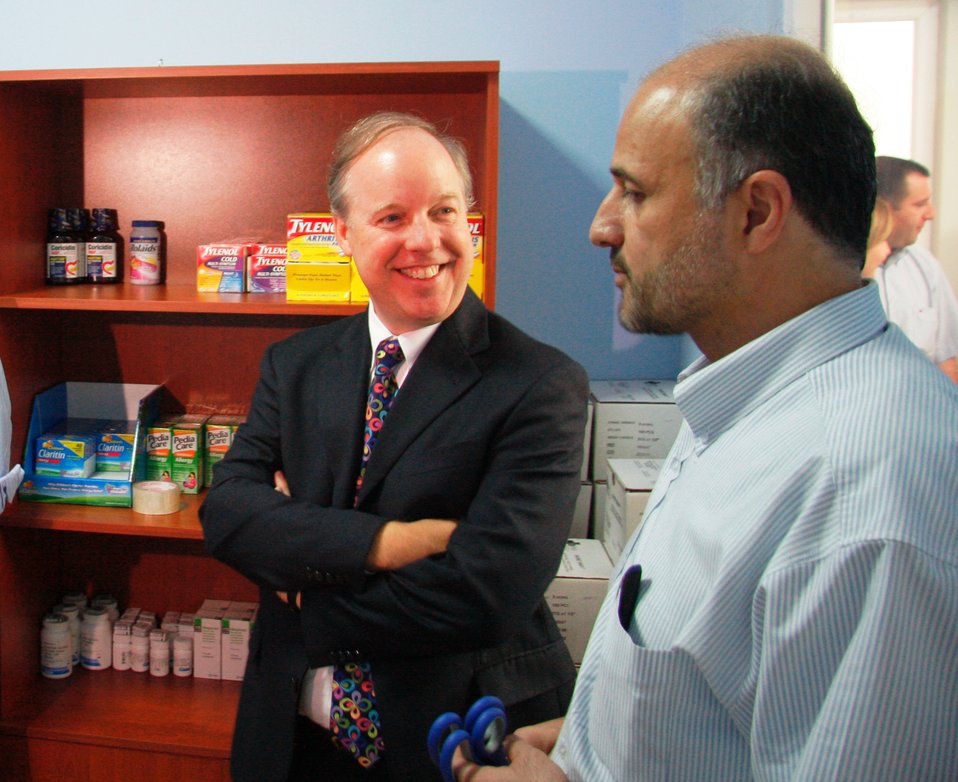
Charge d’Affaires Logsdon Shares a Relaxed Moment

U.S. Embassy Tbilisi in Georgia Charge d’Affaires Kent Logsdon shares a relaxed moment after a ribbon-cutting ceremony to open an outpatient clinic in an IDP settlement in Bazaleti, Georgia, on July 19, 2010.